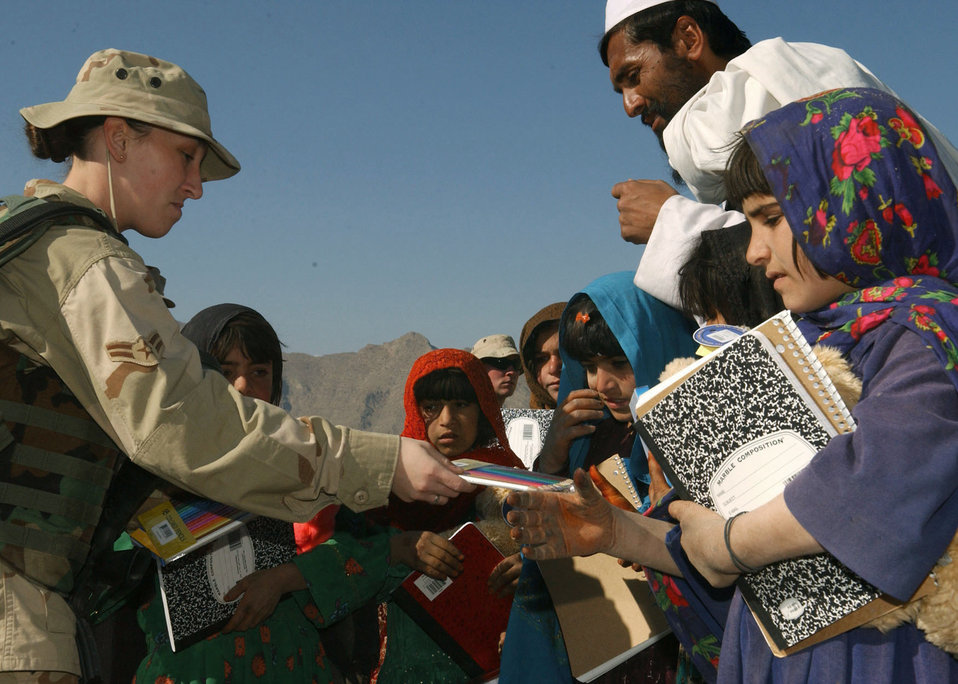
Airmen revive adopt-a-village program

KHAROTI, Afghanistan -- Airman 1st Class Angelique Smith passes out coloring pencils and notebooks to young villagers during a recent adopt-a-village visit. The 455th Expeditionary Support Squadron personnel support technician helped distribute toys and school supplies to more than 100 local children. Airman Smith is deployed to nearby Bagram Air Base from Pope Air Force Base, N.C., supporting Operation Enduring Freedom.